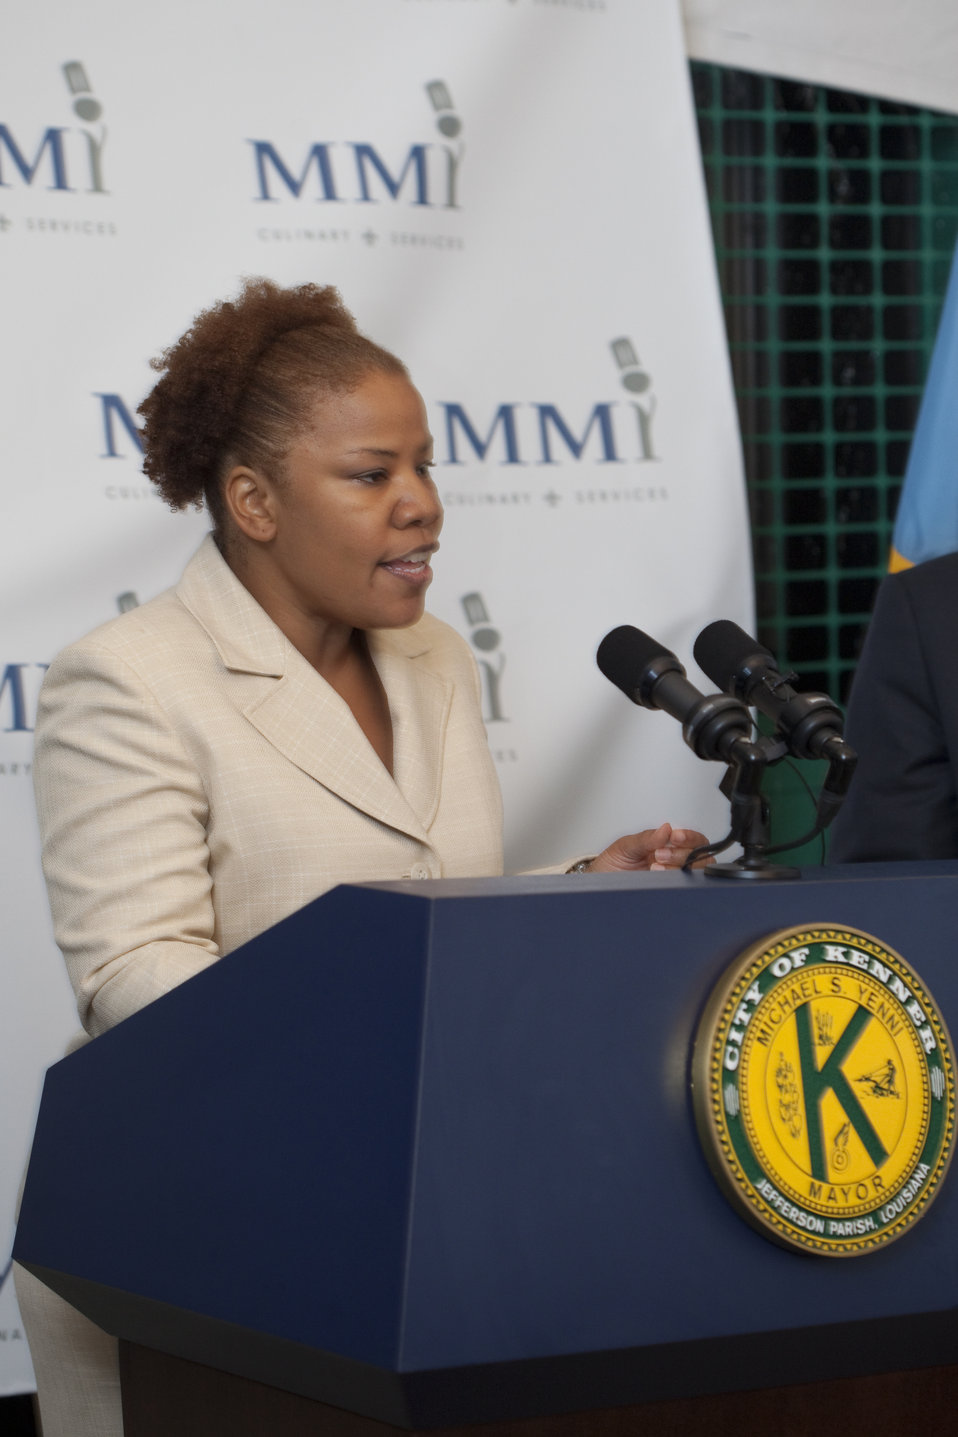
New Orleans No Kids Hungry program representative Rhonda Johnson speaks during Agriculture Secretary Tom Vilsack's visit to MMI, Inc. in Kenner, LA on Wednesday, May 1, 2013.